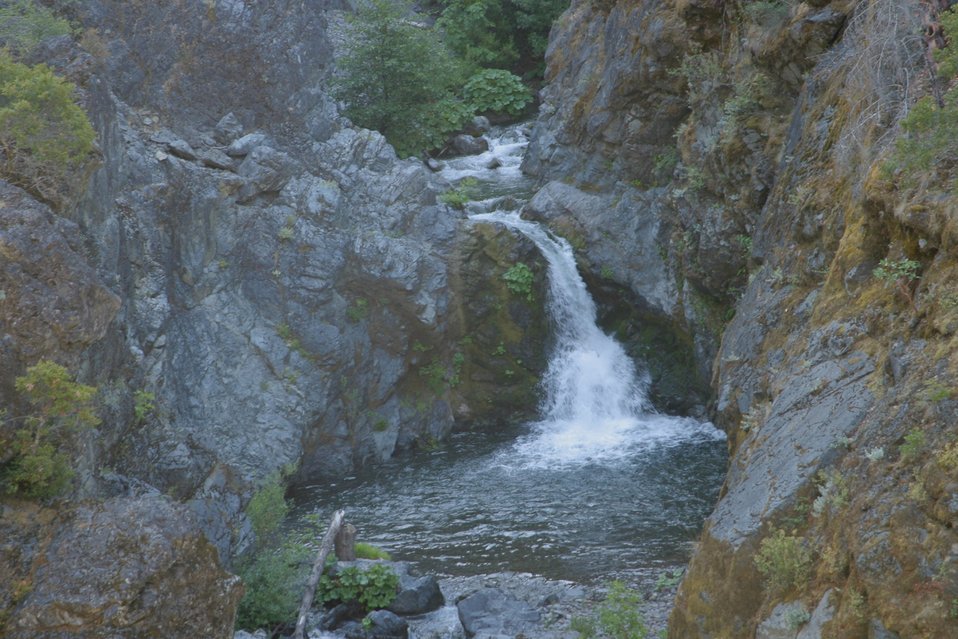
Stair Falls below Mule Creek.